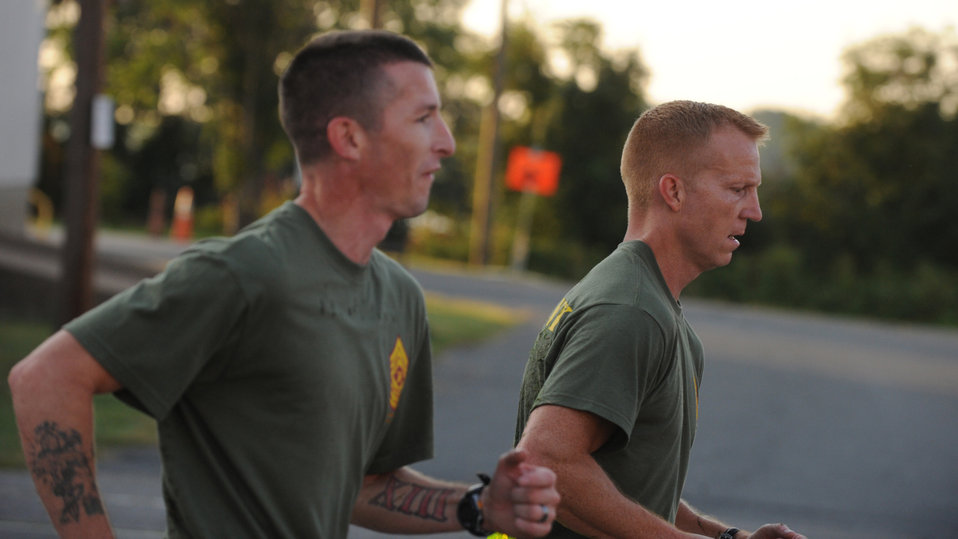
Critical training

Air Force Master Sgt. Michael Noel, right, runs with a Marine during a Professional Military Education (PME) class at Quantico Marine Corp Base, Va., Sept. 14, 2012. Noel is attending the U.S. Marine Corps Staff Noncommissioned Officer Academy Advanced Course as part of a new program called EPME-Next. He is the Secretary of the Air Force Public Affairs superintendent of force management at the Pentagon.